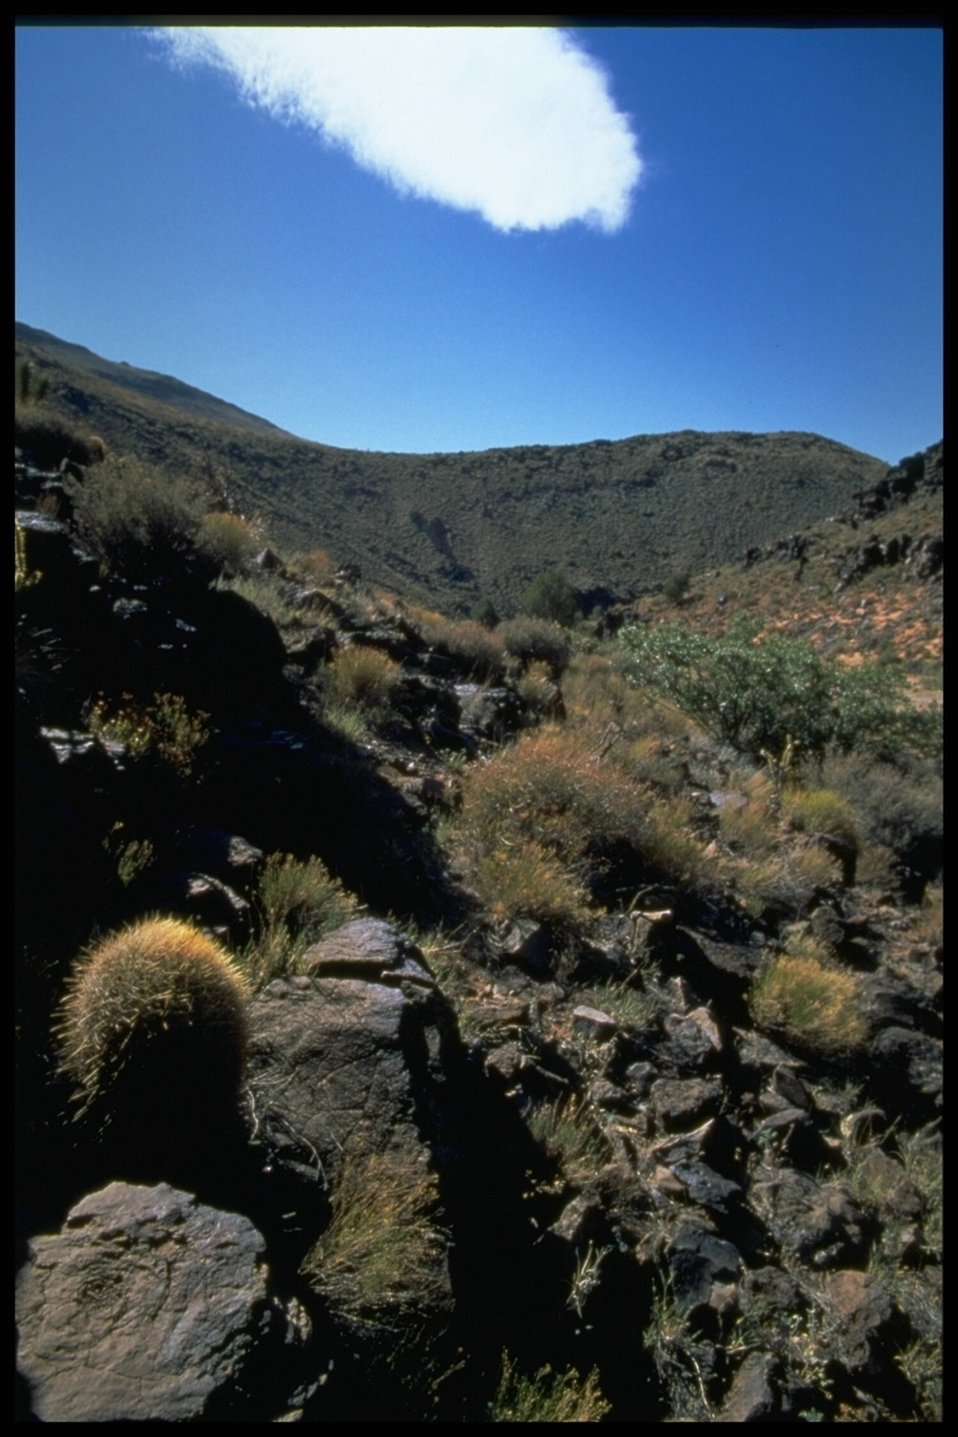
A bueatiful desert view with mountains and cacti covering the hill side.